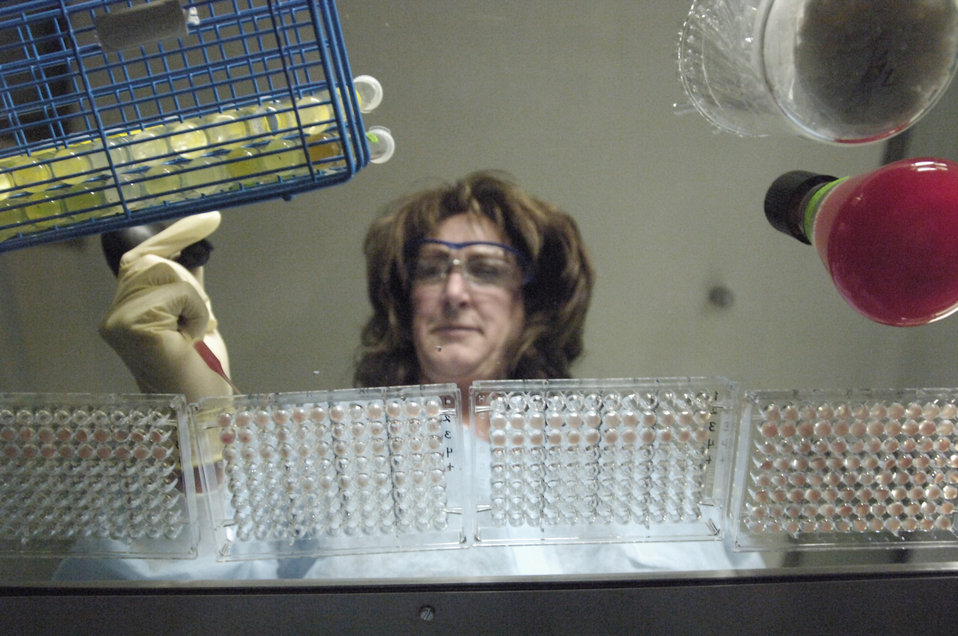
U.S. Department of Agriculture (USDA) Animal and Plant Health Inspection Service (APHIS) APHIS’s National Veterinary Services Laboratory in Ames, Iowa is a World Organization for Animal Health (OIE) reference laboratory for numerous diseases, including avian influenza. These photos show APHIS laboratory technicians performing diagnostic testing and preparing to enter an animal room. They are following prescribed biosafety procedures by wearing the appropriate personal protective equipment.